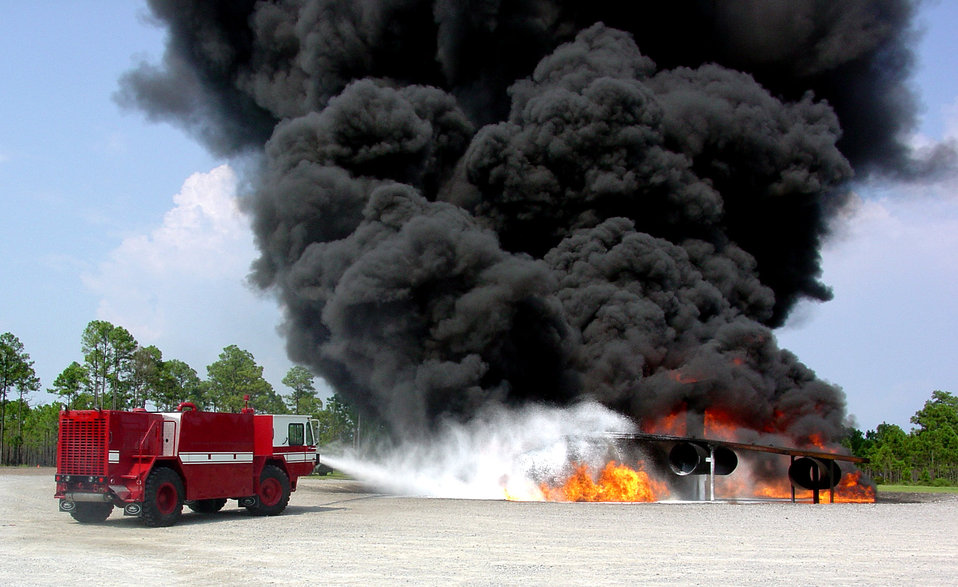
Air Force technology helps put out fires faster

A UHP P-19 truck extinguishes a fire during testing July 15 at Tyndall Air Force Base, Fla. Air Force Research Laboratory scientists developed ultra high pressure firefighting technology that yields greater fire fighting capability from smaller, light-weight vehicles. Starting in fiscal 2008, these new trucks can be deployed in sets of two on a C-130 Hercules, whereas the former fire trucks could only be carried one at a time aboard the aircraft.